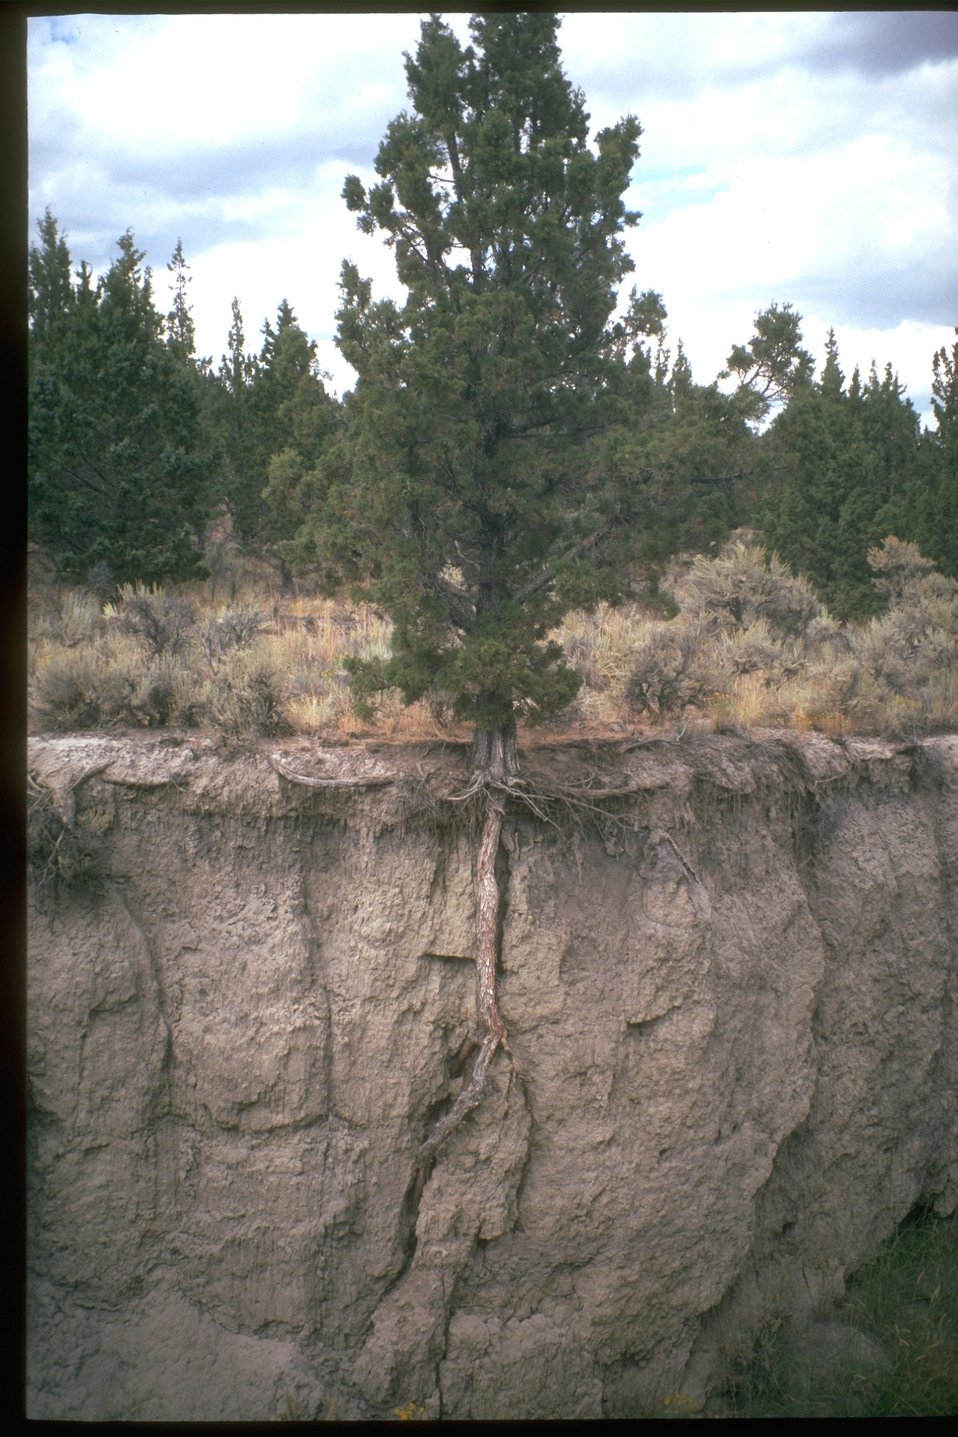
Stream entrenchment showing juniper roots in central Oregon.